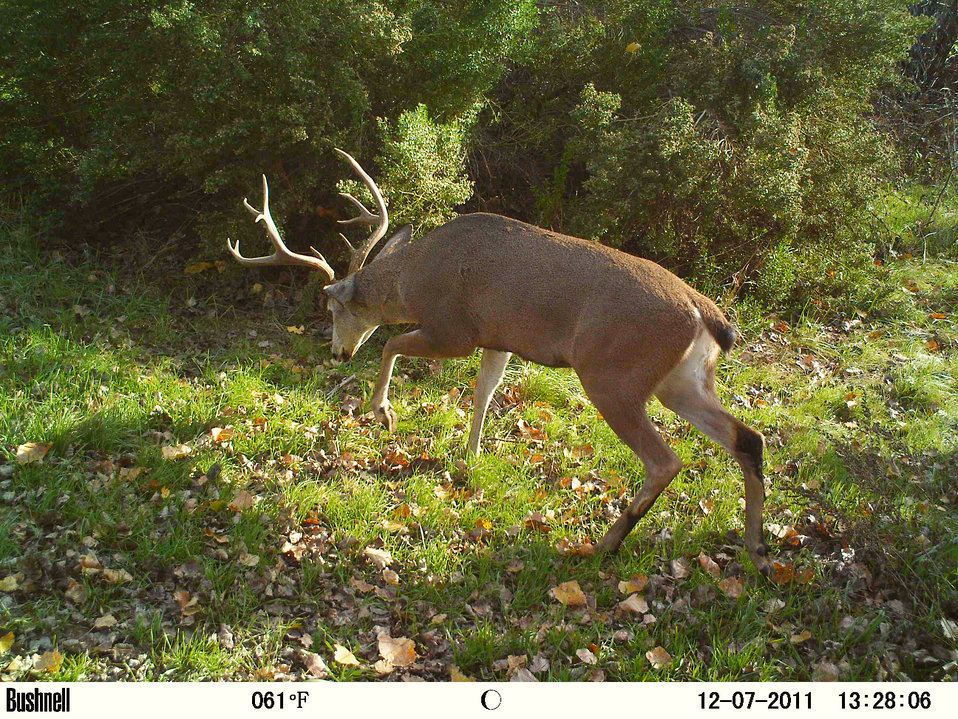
black-tailed deer

A 5 by 6 point buck
rail camera photo
Sacramento River National Wildlife Refuge, CA